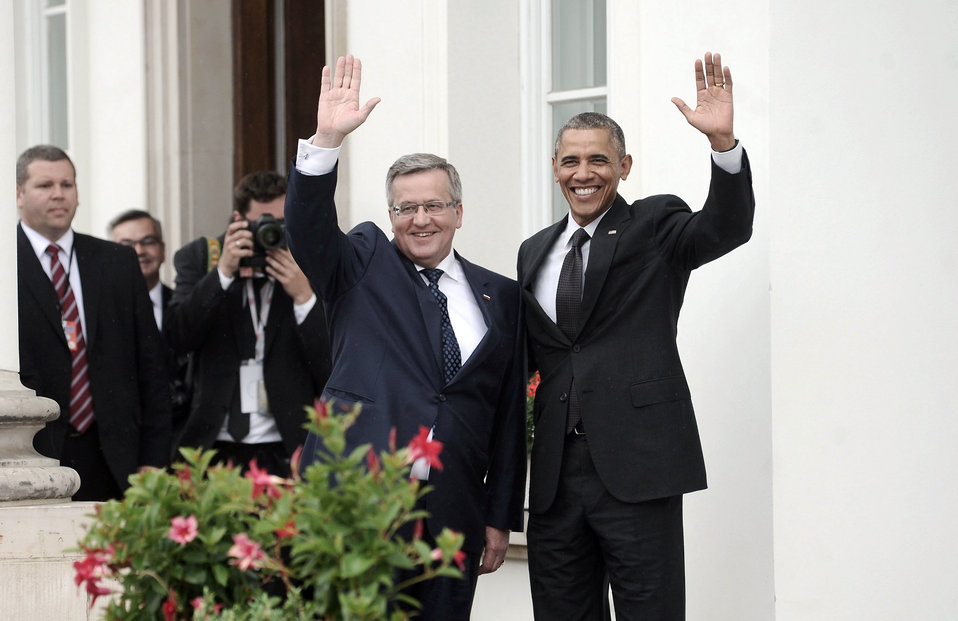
President Obama and Polish President Komorowski Wave at the Belweder Palace

U.S. President Barack Obama and Poland's President Bronislaw Komorowski wave at the Belweder Palace in Warsaw, Poland, on June 3, 2014. [U.S. Mission to Poland photo by Jakub Szymczuk]